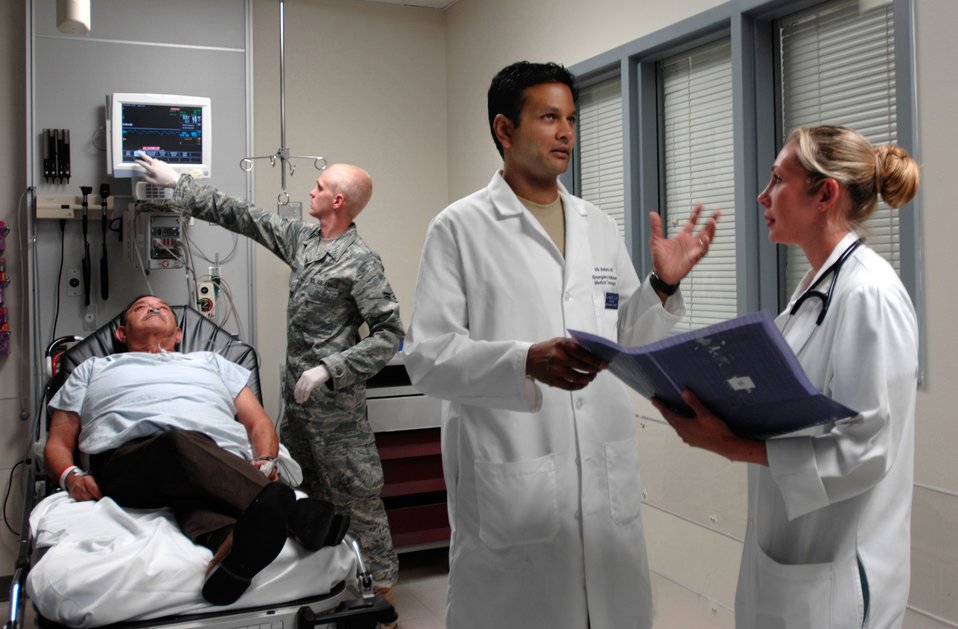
Emergency department

Emergency physicians Majs. (Drs.) Annette Williams (right) and Vikhyat Bebarta discuss patient care April 16 in the emergency department of Wilford Hall Medical Center at Lackland Air Force Base, Texas, while Airman 1st Class Casey Meed, a medical technician, prepares to take a patient's vitals. The three medics are assigned to the 59th Emergency Medical Squadron. Wilford Hall's emergency department is the only level-1 trauma emergency department in the Air Force and provides trauma care to local military and communities and accepts trauma referrals from a 22-county region of Southwest Texas.